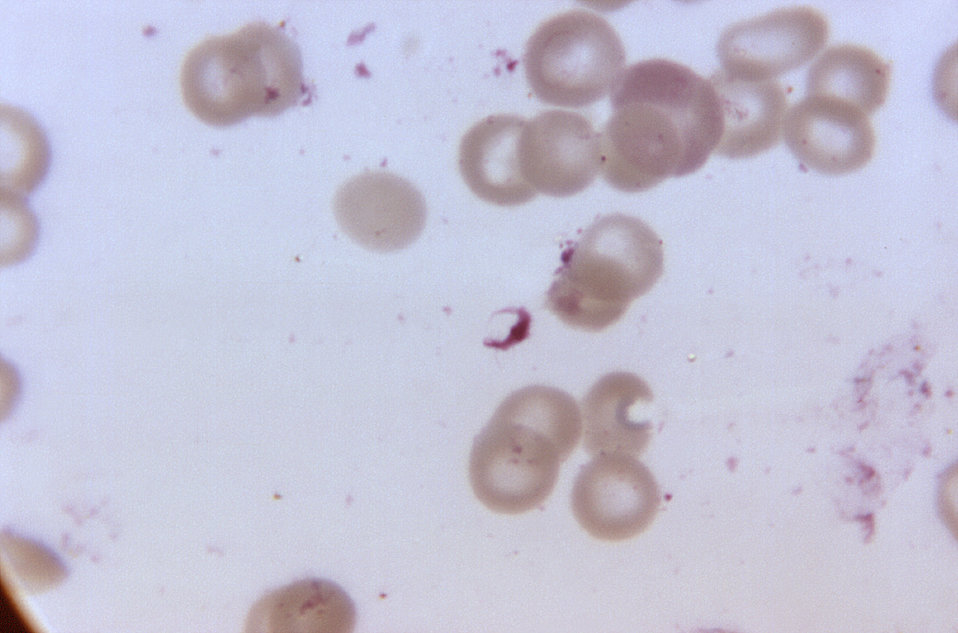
This photomicrograph revealed some of the ultrastructural morphology exhibited by a Plasmodium falciparum gametocyte, i.e., sexual erythrocytic stage, of this malarial parasite, which was found in a blood sample from a patient who had been treated with an unknown therapeutic agent.